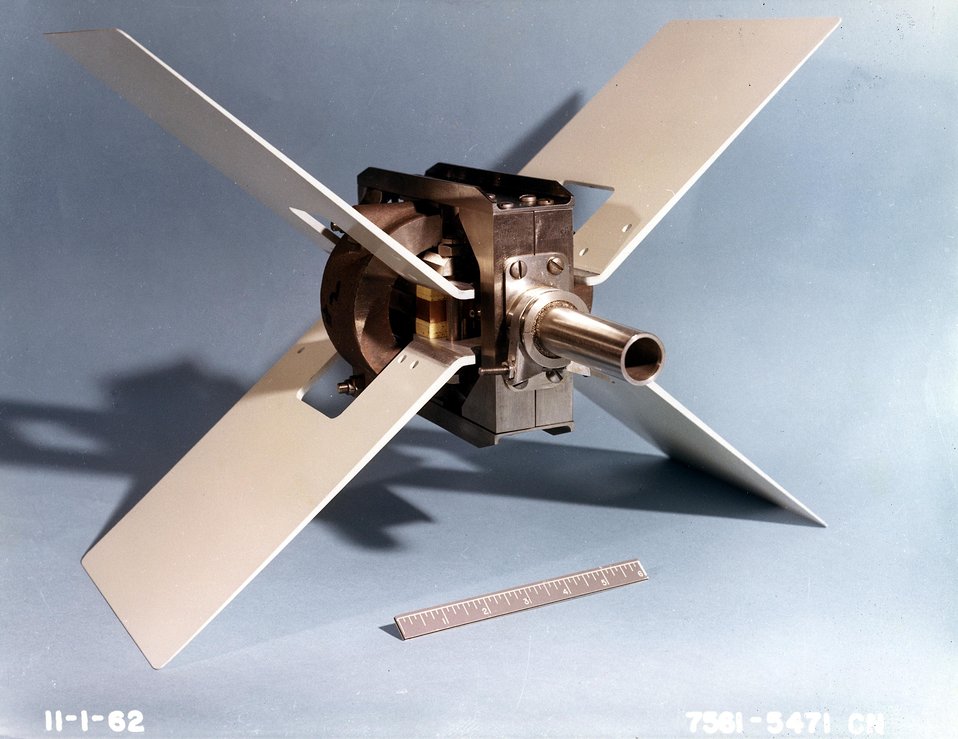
SNAP 10A thermoelectric pump.